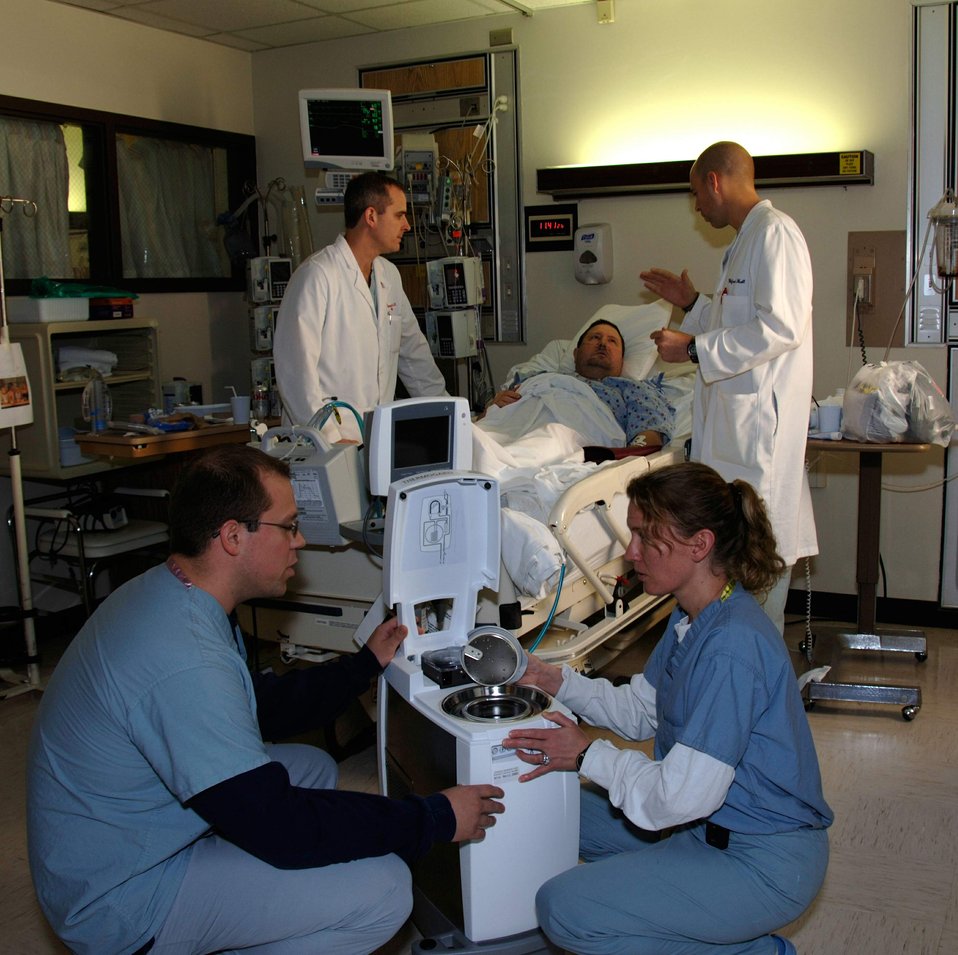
New technology helps cardiac patient

Capt. (Dr.) Jason Higey (left front) and Maj. (Dr.) Karin Hawkins (right front) prepare to show a patient a therapeutic hypothermia machine as Maj. (Dr.) Benjamin Romick (back left) and Dr. Andrew Muck (back right) explain how the machine was used to treat him at Wilford Hall Medical Center at Lackland Air Force Base, Texas.